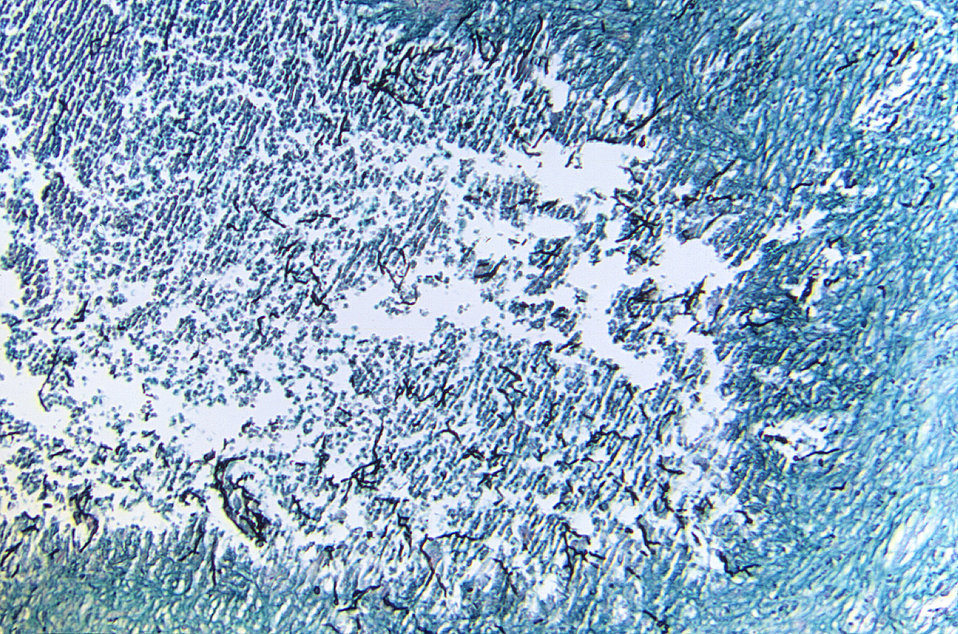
Under a relatively low magnification of 100X, this Gamori-stained photomicrograph revealed the presence of Cladosporium bantianum fungal organisms. Note the numerous phaeoid, or pigmented filamentous branching hyphae in this unknown tissue specimen.